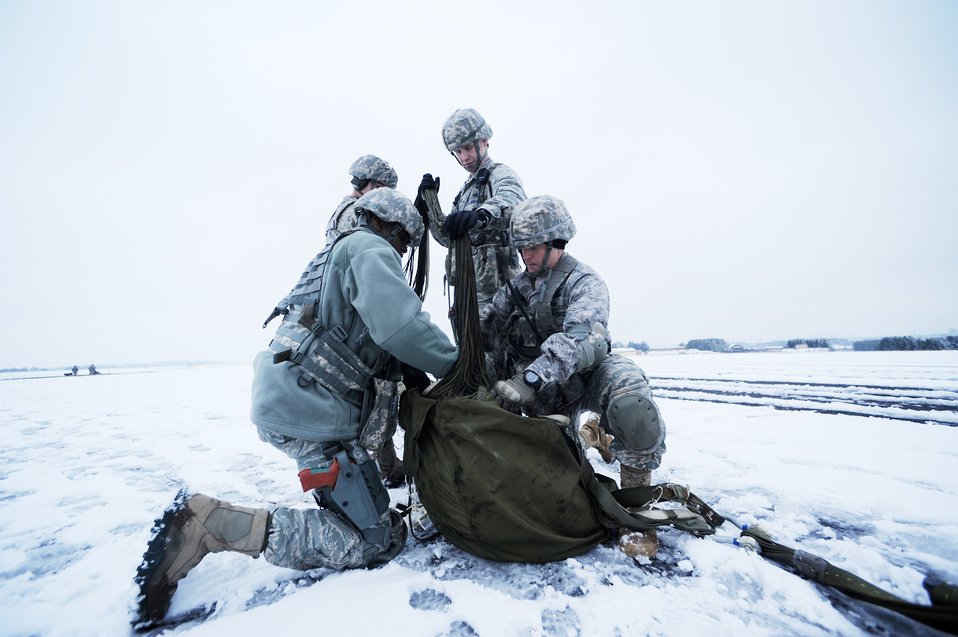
Ramstein forces practice air insertion

Airmen from the 435th Security Forces Squadron at Ramstein Air Base, Germany, secure equipment parachutes at nearby Bitburg Airport, Jan. 25, 2010, in preparation of Ramstein's operational readiness inspection in September. The unit is setting up bare-base operations as part of the dual-wing operational readiness exercise with the 86th Airlift Wing.